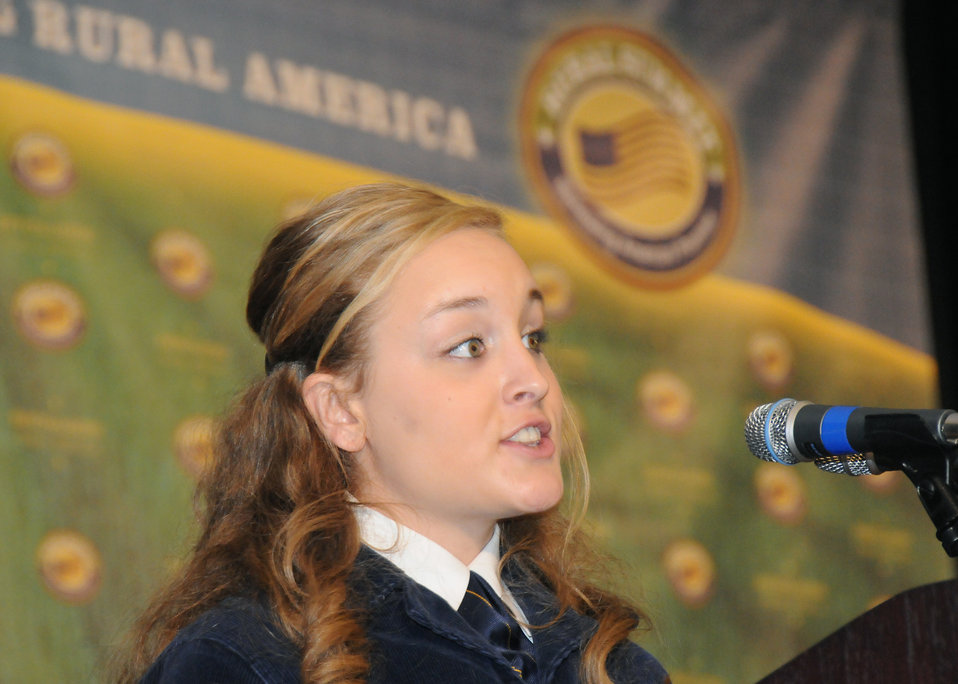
Immediate Past State FFA Officer from Missouri Taylor Huhmann speaks at the National Rural Summit held at Jefferson College in Hillsboro, MO., on Thursday, June 3, 2010. USDA photo 10di1387-39